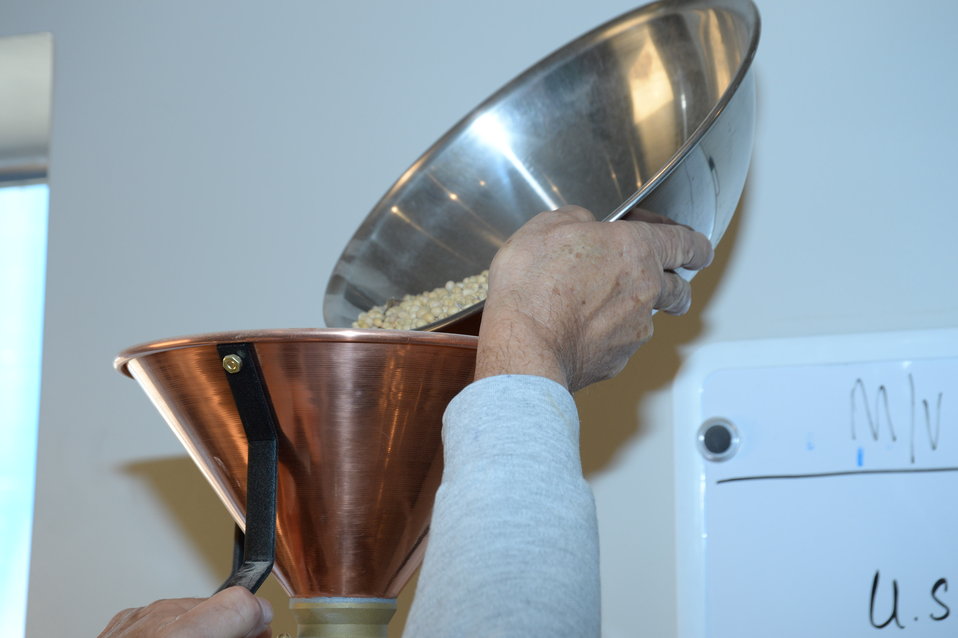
U.S. Department of Agriculture (USDA) Grain Inspection, Packers and Stockyards Administration (GIPSA) Federal Grain Inspection Service (FGIS) employee tests U.S. grain ready for export near the Port of New Orleans in New Orleans, LA on Tuesday, Nov. 19, 2013.